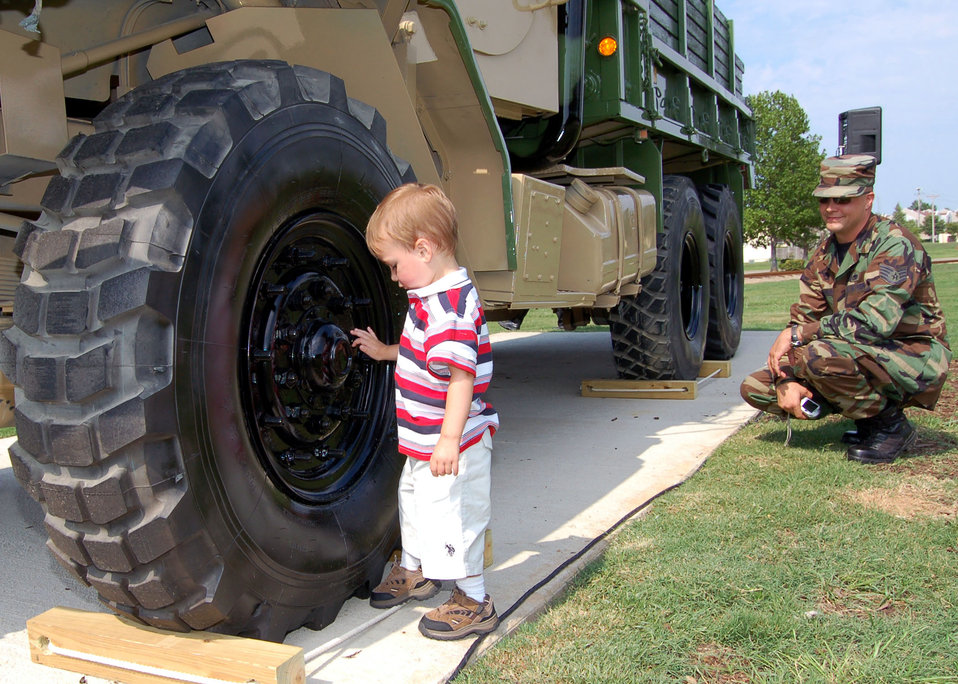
Dedication recognizes Airmen who deliver under fire

Staff Sgt. Brian Hanson watches his 2-year-old son, Christopher, check out the tire of a convoy gun truck shortly before it was dedicated as a static display at the Air Force Enlisted Heritage Hall July 23 at Maxwell Air Force Base's Gunter Annex, Ala. Sergeant Hanson, assigned to the 1st Special Operations Logistics Readiness Squadron at Hurlburt Field, Fla., is the supervisor of the shop that recently volunteered off-duty time to fabricate the vehicle.